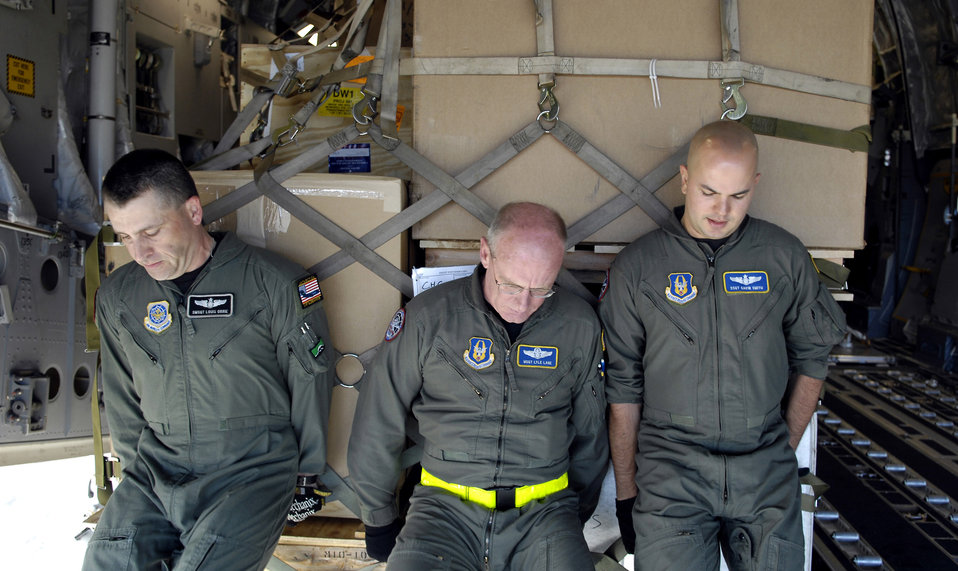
Ice, ice baby!

Senior Master Sgt. Louis Orrie, Master Sgt. Lyle Lane and Staff Sgt. Gavin Smith push a pallet onto their C-17 Globemaster III prior to taking off Nov. 26 from Christchurch, New Zealand, during Operation Deep Freeze. The Airmen, loadmaster, along with other Reserve and active duty Airmen from McChord Air Force Base, Wash., are at Christchurch supporting the 13th Air Force-led Joint Task Force Support Forces Antarctica, Operation Deep Freeze. Operation Deep Freeze is a unique joint- and total-force mission that has supported the National Science Foundation and U.S. Antarctic Program that began in 1955.